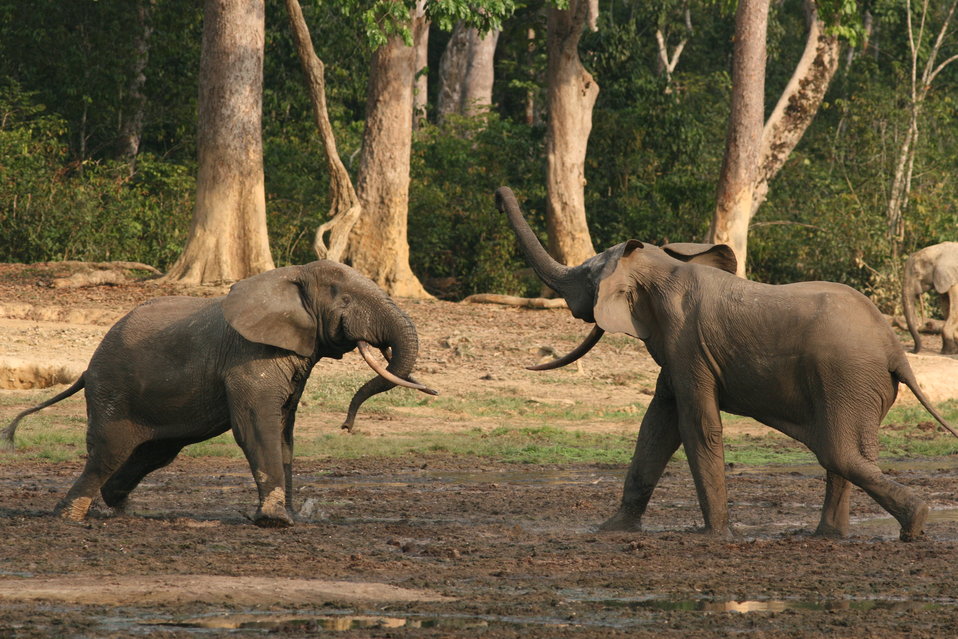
Forest elephant group 8

Elephant males throughout their lives challenge one another to establish dominance.